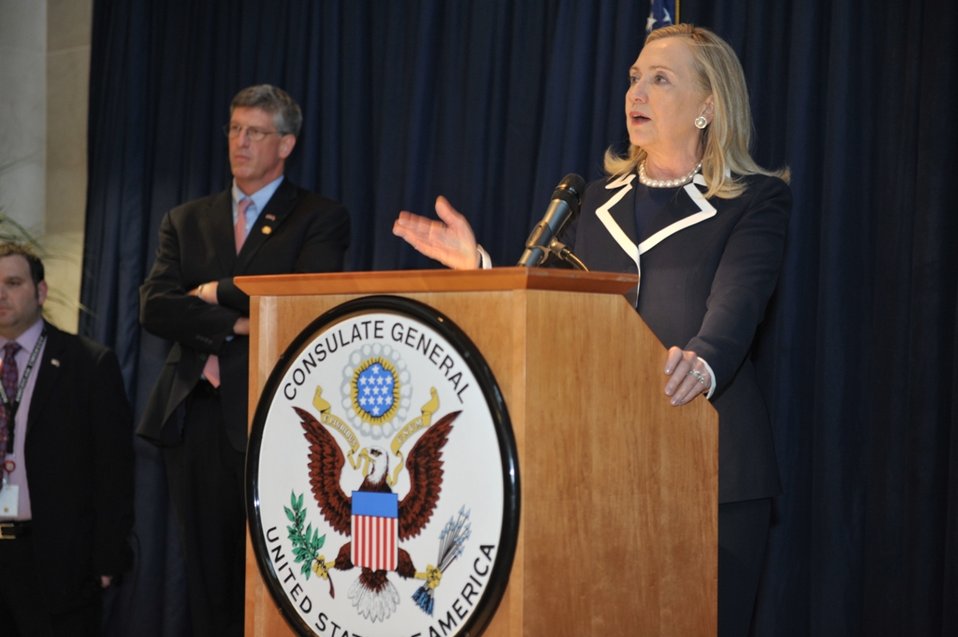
Secretary Clinton Delivers Remarks

U.S. Secretary of State Hillary Rodham Clinton, flanked by U.S. Ambassador to South Africa Donald Gips, delivers remarks to staff and family members of the U.S. Consulate General in Johannesburg, South Africa, on August 6, 2012.